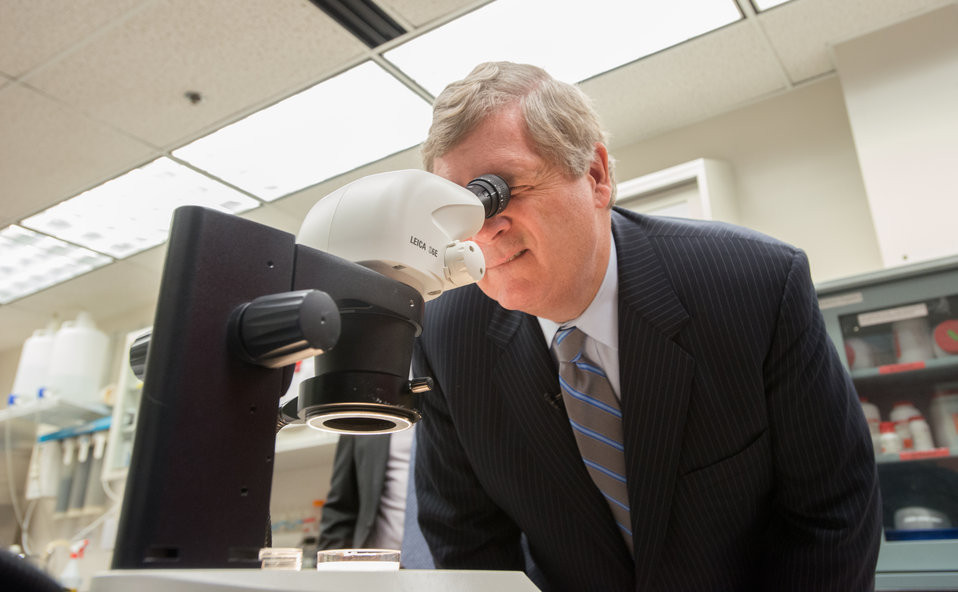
Agriculture Secretary Tom Vilsack looks through a microscope at plant tissues at the U.S. Department of Agriculture (USDA) Agriculture Research Service (ARS) National Center for Genetic Resources Preservation (NCGRP) Tissue Culture Preparation Laboratory in Ft. Collins, CO on Wednesday, Nov. 6, 2013. NCGRP is the largest agricultural gene bank facility in the U.S. The NCGRP staff conducts groundbreaking research to develop more efficient and effective means for preserving plant and animal germplasm, and for better understanding the genetic structure of these invaluable materials. The research findings, preservation techniques, and specialized technology developed by the NCGRP have been adopted by gene banks around the world: many international scientists travel to the NCGRP for research and training.